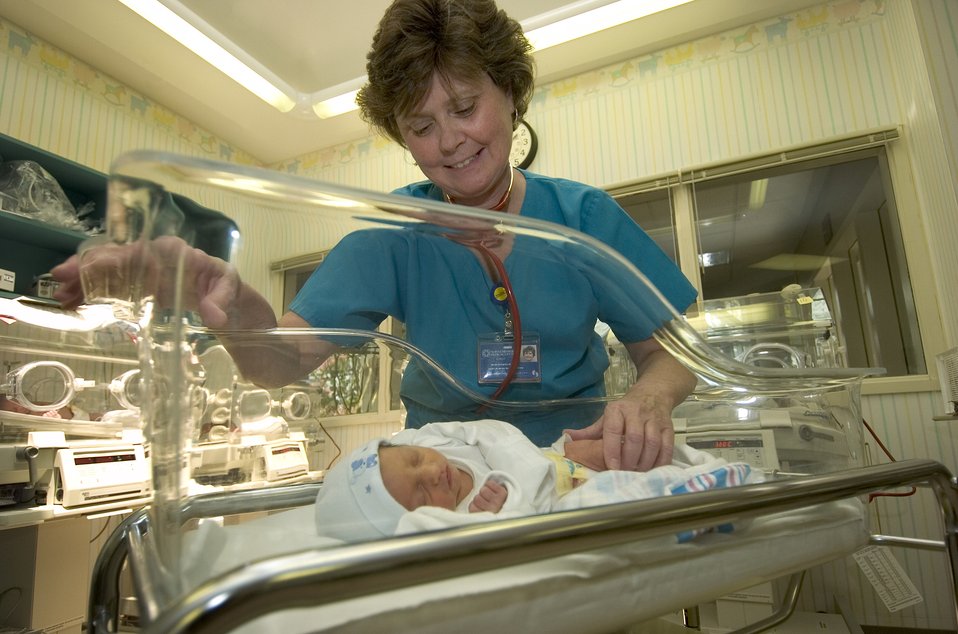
2006 Baldrige Award, North Mississippi Medical Center

Credti: Courtesy North Mississippi Medical Center